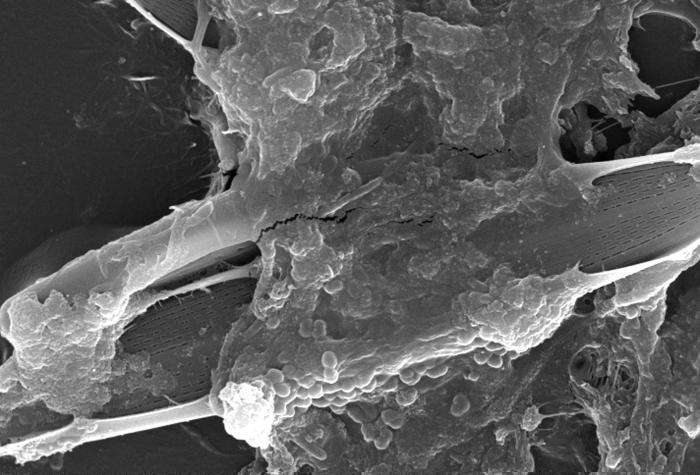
This scanning electron micrograph (SEM) of an untreated water specimen extracted from a wild stream mainly used to control flooding during inclement weather, revealed the presence of unidentified organisms, which included bacteria, protozoa, and algae. Visible in this particular image were a number of different microorganisms including elongated diatoms, and an amorphic gelatinous biofilm mass, which had enveloped amoeboid and bacterial organisms. For a colorized version of this image, see PHIL 11712.